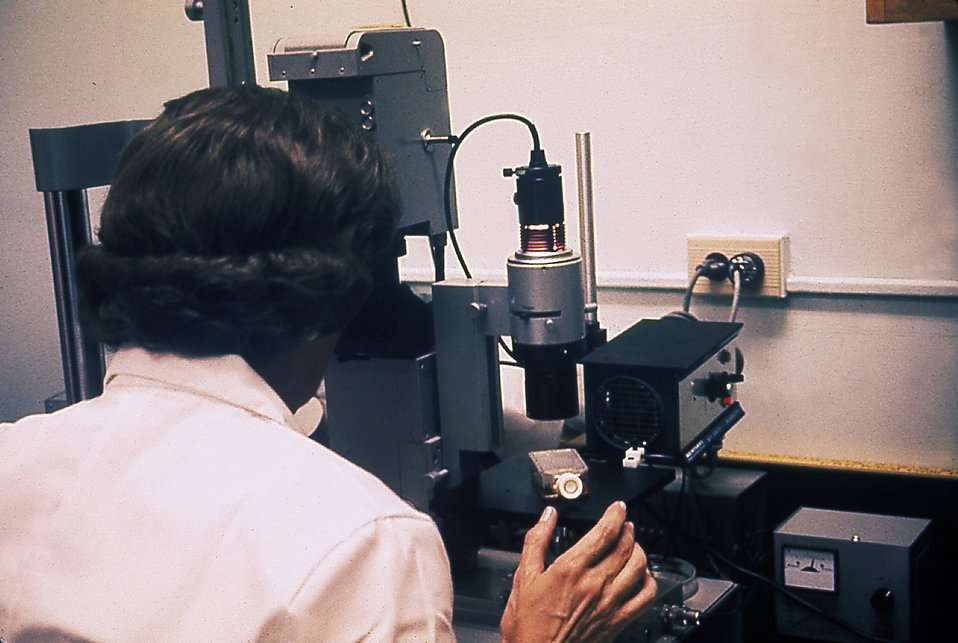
This lab technician is shown checking for mitotic activity in amniotic fluid cell colonies under an inverted scope.